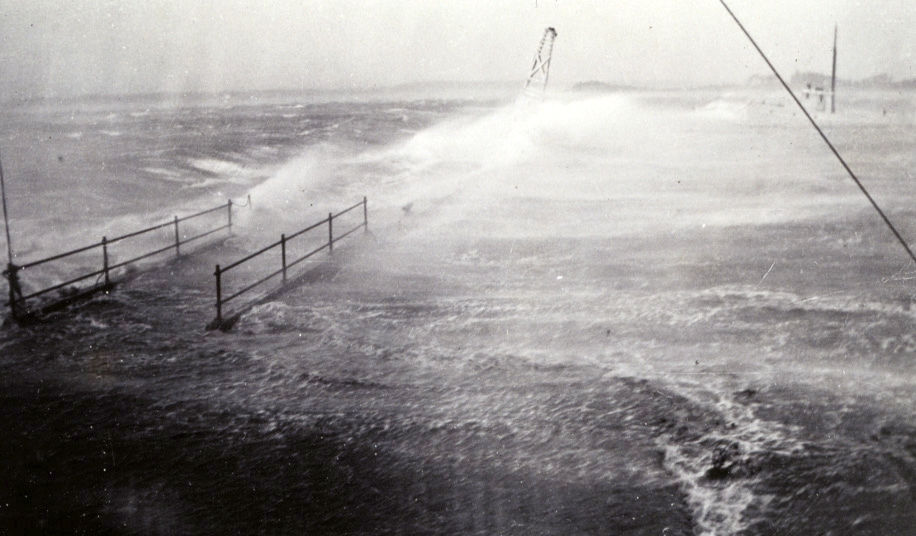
Woods Hole during 1938 hurricane. Heavy surf breaking over SE side of Quadrangular dock.